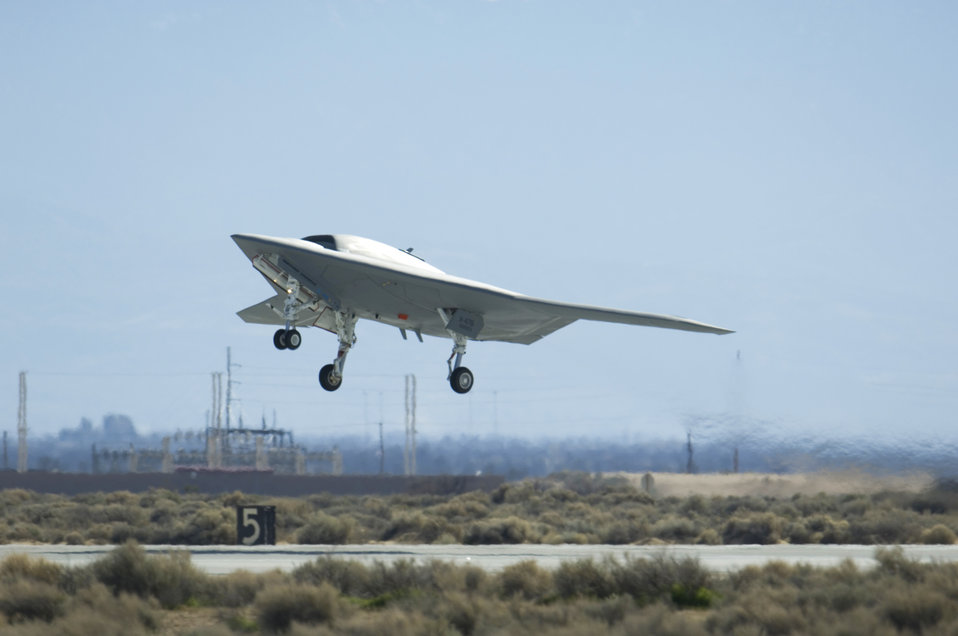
X-47B flight

A Navy X-47B Unmanned Combat Air System Demonstration aircraft takes off and flies for the first time Feb. 4, 2011, at Edwards Air Force Base, Calif. The Northrop Grumman-built aircraft flew for 29 minutes during the flight test.